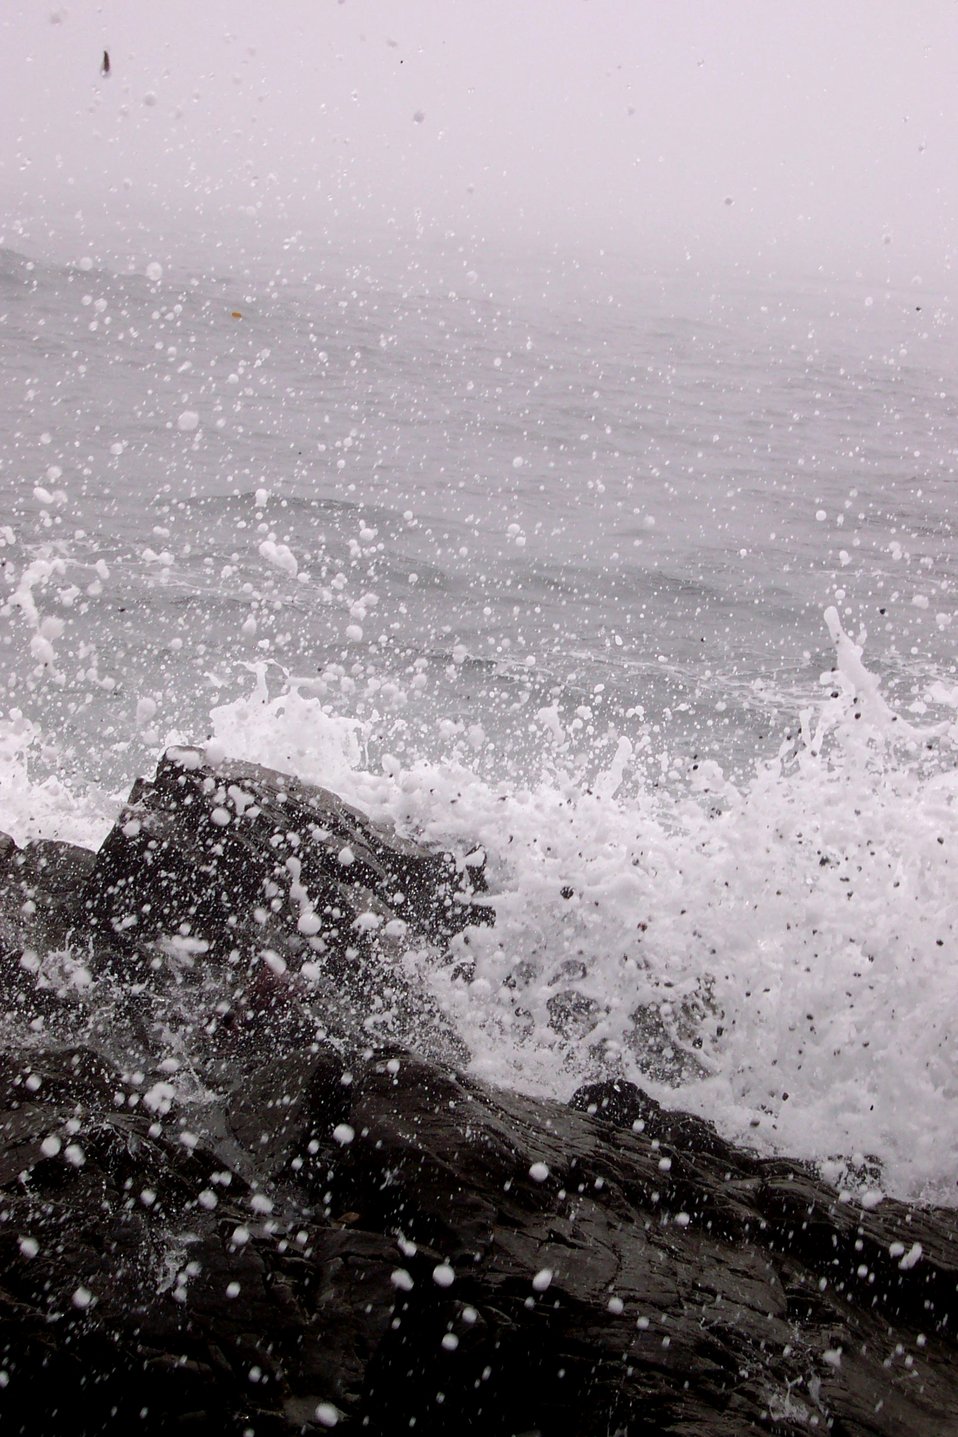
Sea spray and rocks at the eastern end of the United States.